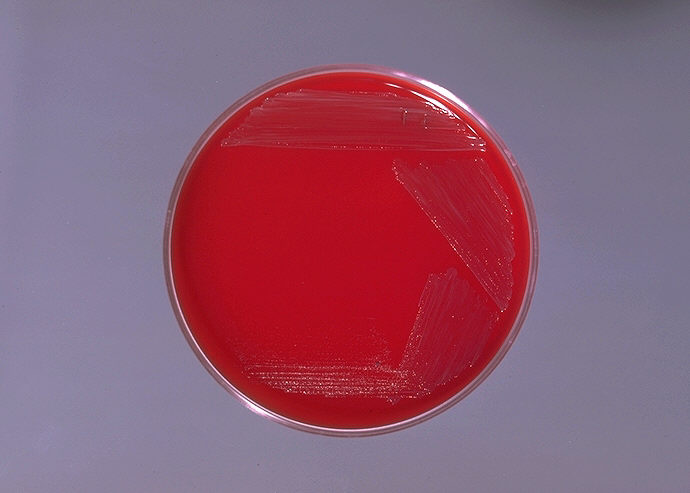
Blood agar plate culture of Corynebacterium aquaticum.